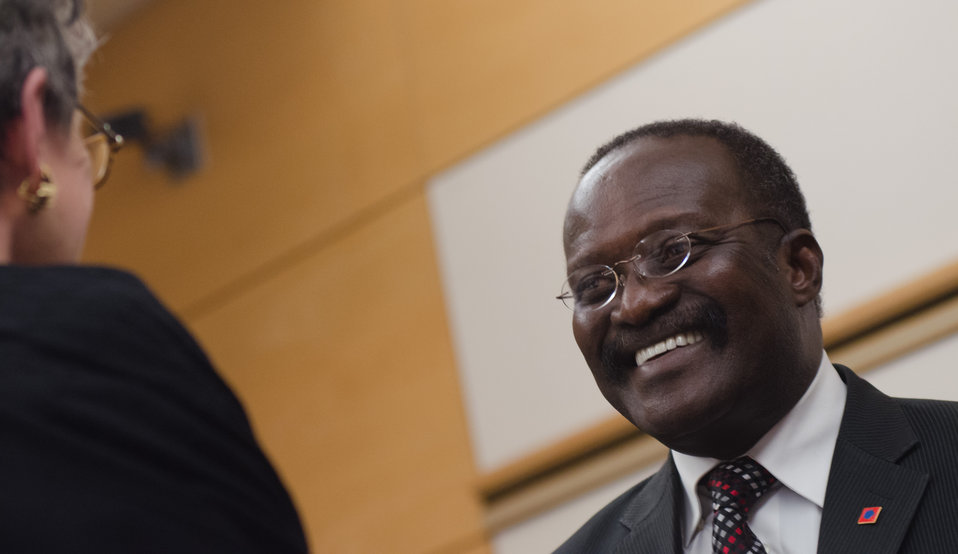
Tanzania, Minister of Food and Agriculture the Honorable Kwesi Ahwoi talks with Agriculture Undersecretary, Research Education and Economics Dr. Catherine Woteki, after the African Heads of State conference at the Ronald Reagan Federal Building in Washington, D.C., on Friday, May 18, 2012.